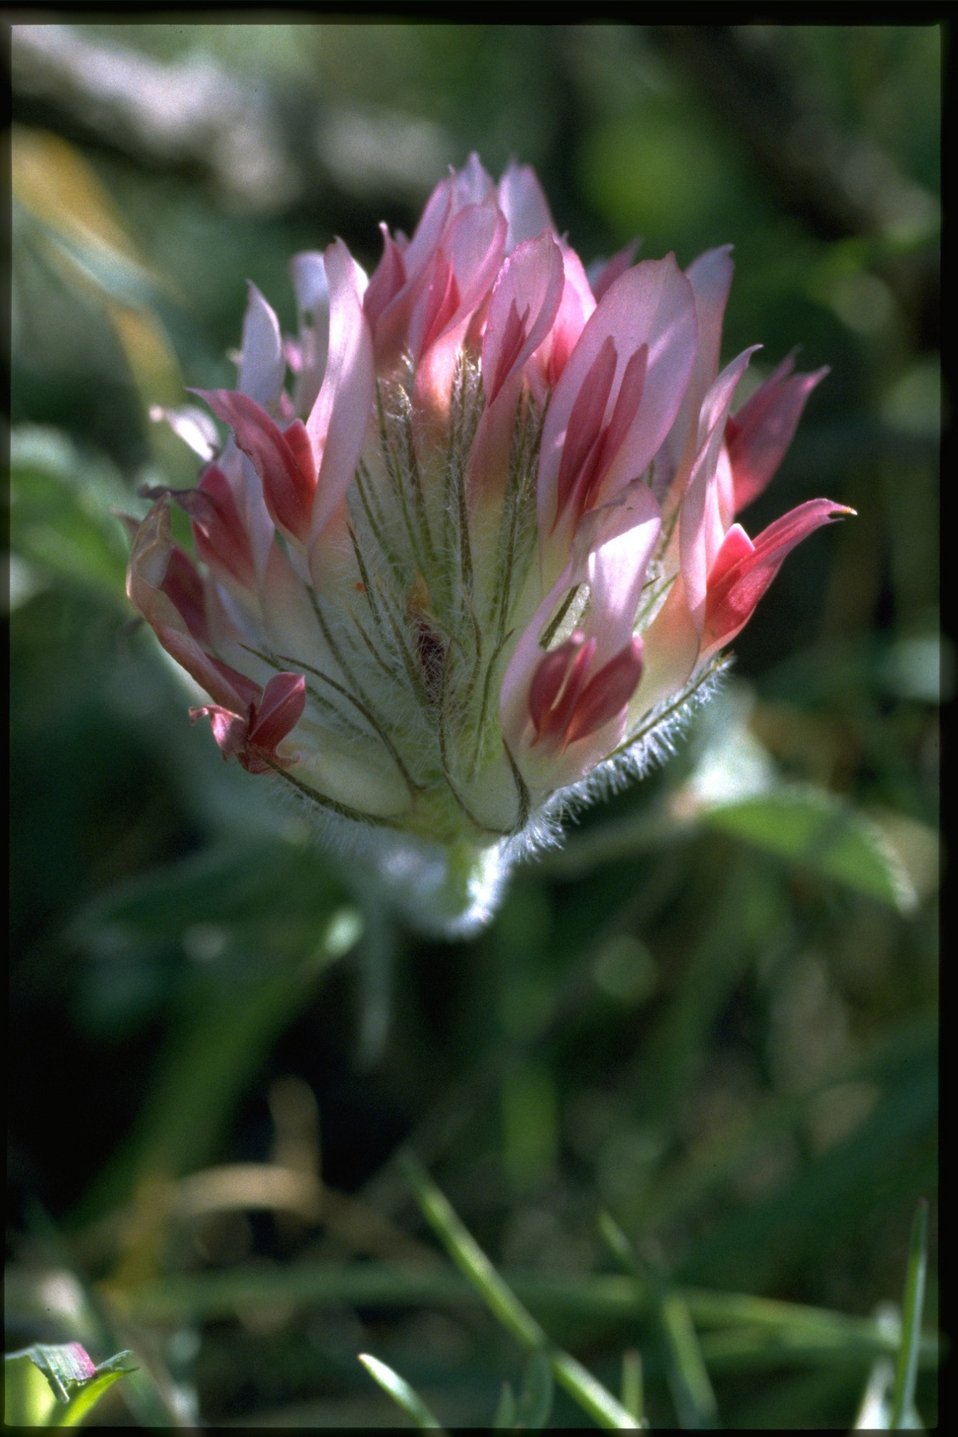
Closeup shot of Big-headed Clover (Trifolium Macrocephalum).